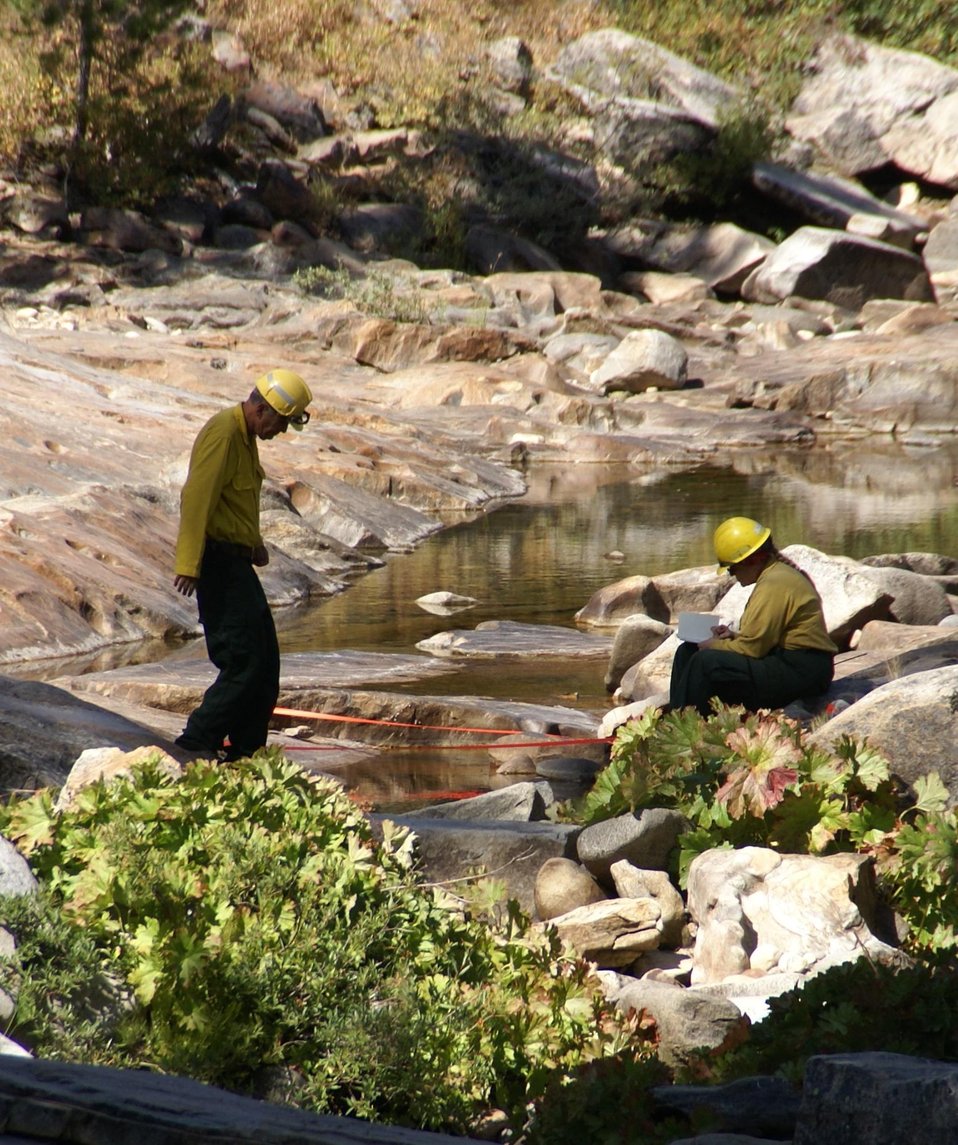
Burned Area Emergency Response (BAER) specialists Barry Hill and Mary Flores measure stream flow to ensure sufficient flow in the Clavey River for the protection of fish habitat after the Rim Fire. BAER is a rapid assessment of burned watersheds by a BAER team to identify imminent post-wildfire threats to human life and safety property and critical natural or cultural resources on National Forest System lands and take immediate actions to implement emergency stabilization measures before the first major storms. Fires result in loss of vegetation exposure of soil to erosion and increased water runoff that may lead to flooding increased sediment debris flows and damage to critical natural and cultural resources. BAER team members implement seeding and mulching installation to prevent erosion, erect temporary water run-off control structures that will protect recovering areas, and installation of warning signs, replace safety related facilities, remove safety hazards, prevent permanent loss of habitat for threatened and endangered species, and prevent the spread of noxious weeds and protect critical cultural resources. The Rim Fire in the Stanislaus National Forest near in California began on Aug. 17, 2013 and is under investigation. The fire has consumed approximately 256,169 acres and is 84% contained.